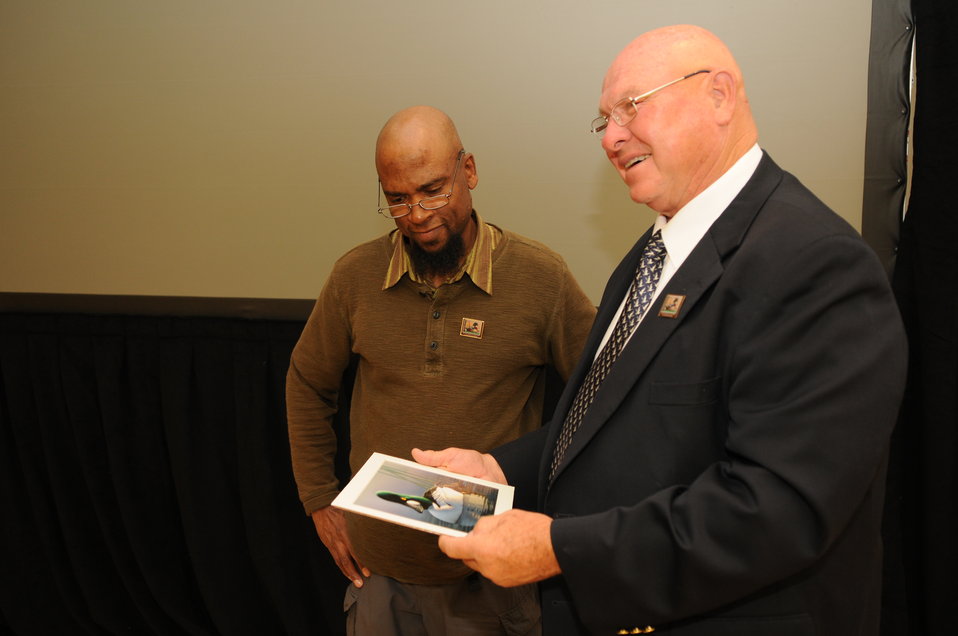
Everyone Loves a Winner

The U.S. Fish & Wildlife Service sponsored the 2012 Federal Duck Stamp Art Contest September 28 and 29 in Ogden, Utah, at Weber State University. A panel of five judges was responsible for choosing the art work used to design the 2013-2014 Migratory Bird Hunting and Conservation Stamp.